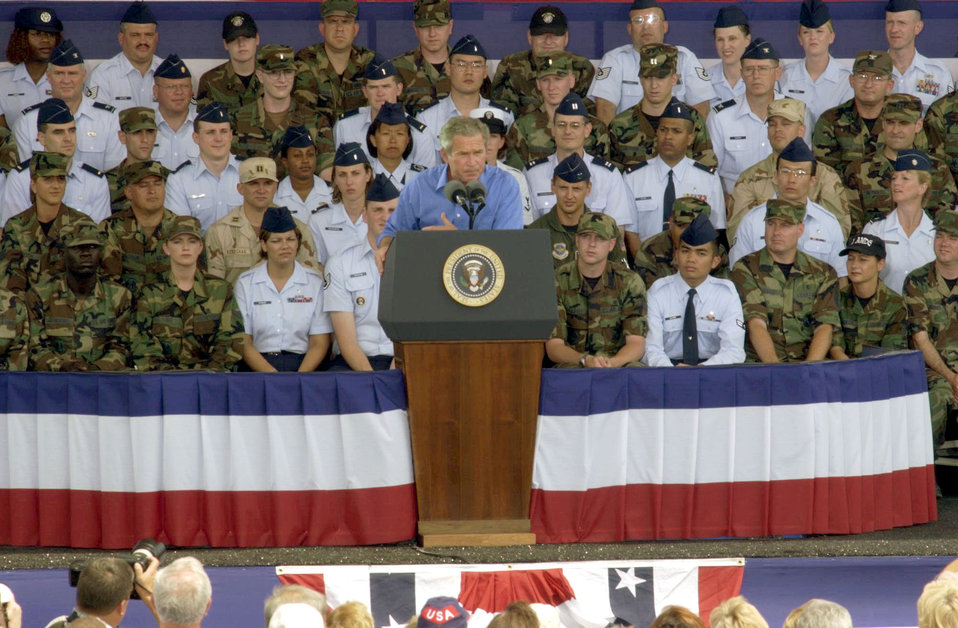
Commander-In-Chief

WRIGHT-PATTERSON AIR FORCE BASE, Ohio -- President George W. Bush addresses approximately 20,000 people here July 4. During his address, Bush said